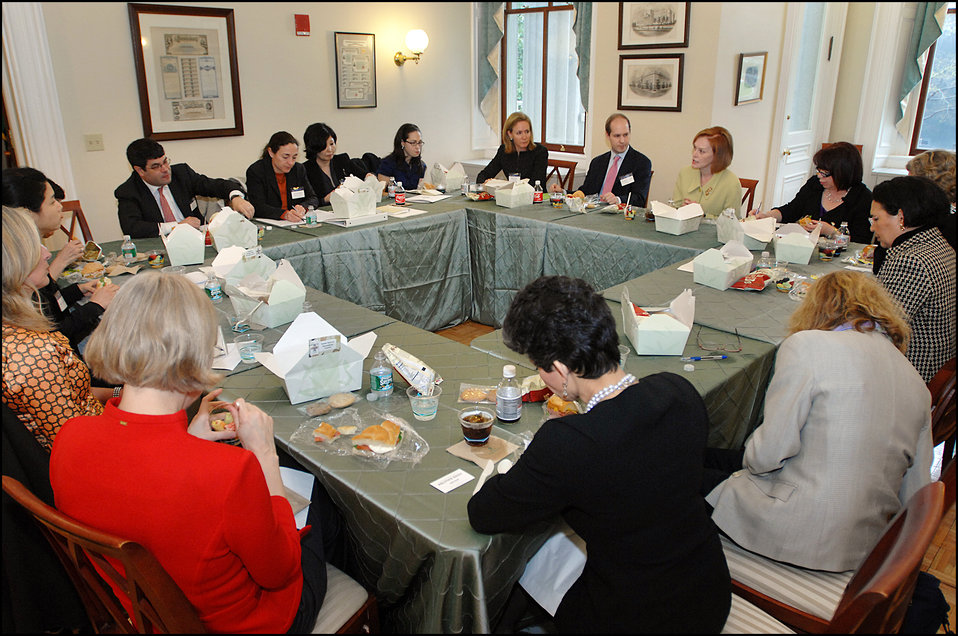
Women in Finance Symposium, 03/29/2010

Participants at the Women in Finance Symposium at Treasury discussing Solutions and Success Stories during a working breakout lunch, March 29, 2010.